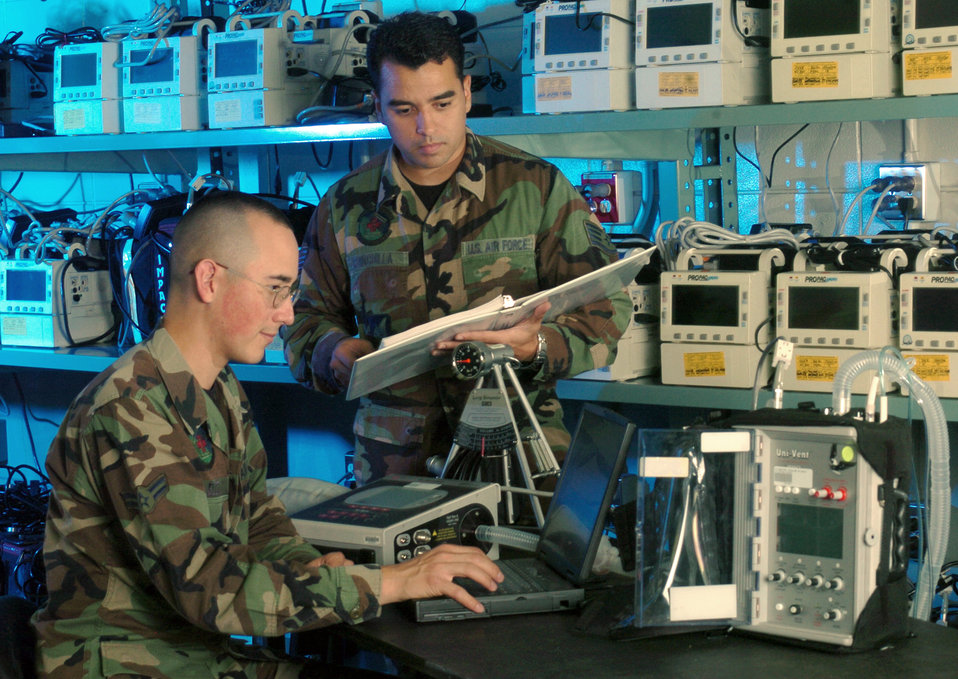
Medical maintainers

YOKOTA AIR BASE, Japan -- Staff Sgt. Sergio Chinchilla (standing) and Airman 1st Class Thomas Elliott calibrate a ventilator during an inspection at the 374th Medical Support Squadron's medical equipment repair center element here. Both Airmen are biomedical equipment technicians. The element staff is responsible for acquiring, installing, maintaining and disposing of medical equipment for the base's 374th Medical Group. They also provide intermediate equipment maintenance for various bases throughout the Pacific region.